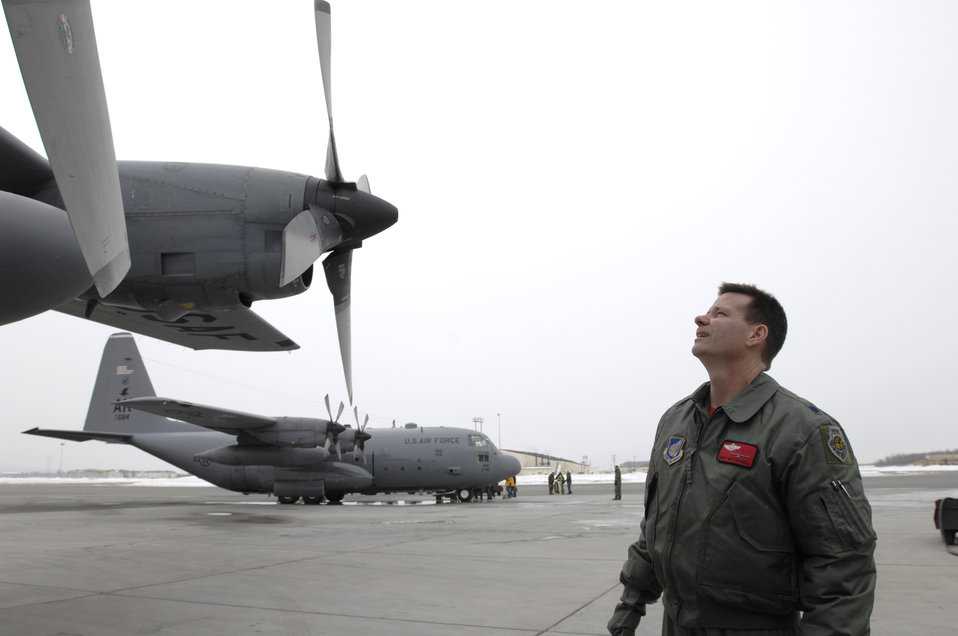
C-130s leaving Alaska

Lt. Col. Gary Gottschall performs a preflight inspection of his C-130 Hercules at Elmendorf Air Force Base, Alaska, March 23 prior to its final flight. After 43 years of continuous service in Alaska, the flight will mark the end of the C-130 era at Elmendorf. Airmen there soon will see C-17 Globemaster IIIs taking over the airlift mission. Colonel Gottschall is the 517th Airlift Squadron commander.